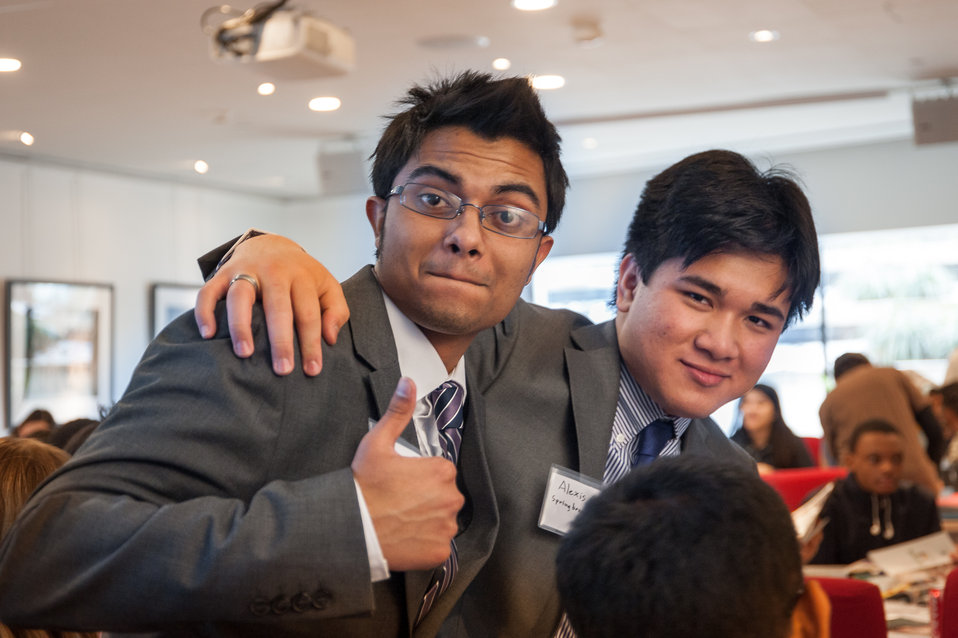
Mentor NDFW Event 2014

Mentor Foundation USA, in partnership with the National Institute on Drug Abuse (NIDA) and other key partners hosted a Youth Drug Facts Rally at the House of Sweden on Thursday, 30th January 2014. Approximately 200 students from five local high schools attended and had the opportunity to interact with top U.S. scientific experts and inspiring guest speakers to “shatter the myths” about drugs and substance abuse, while pledging to stay drug-free.